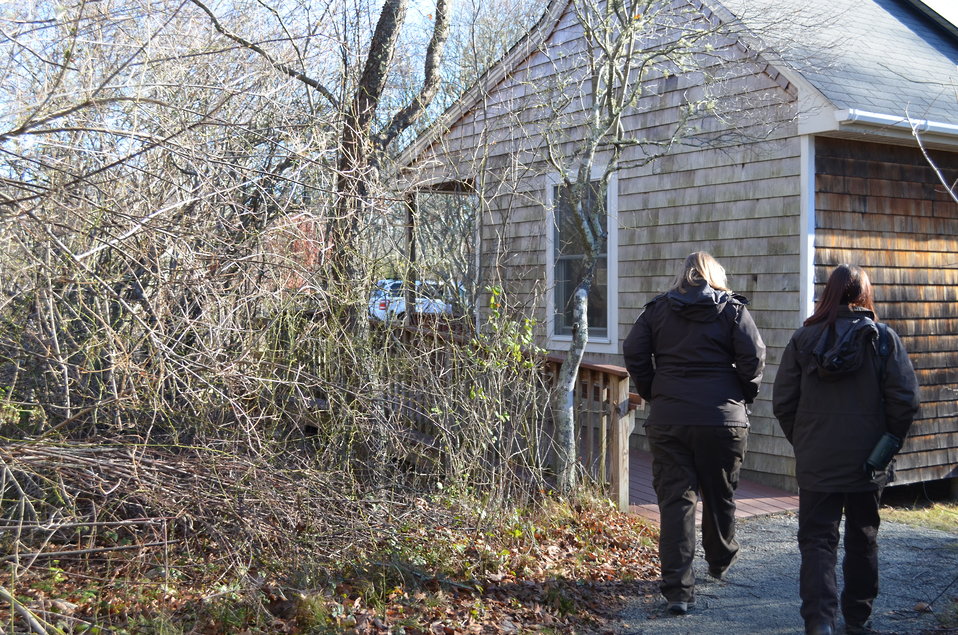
Trustom Pond National Wildlife Refuge Visitor Station (RI)

The building provides educational materials for visitors, and is staffed by Service volunteers.